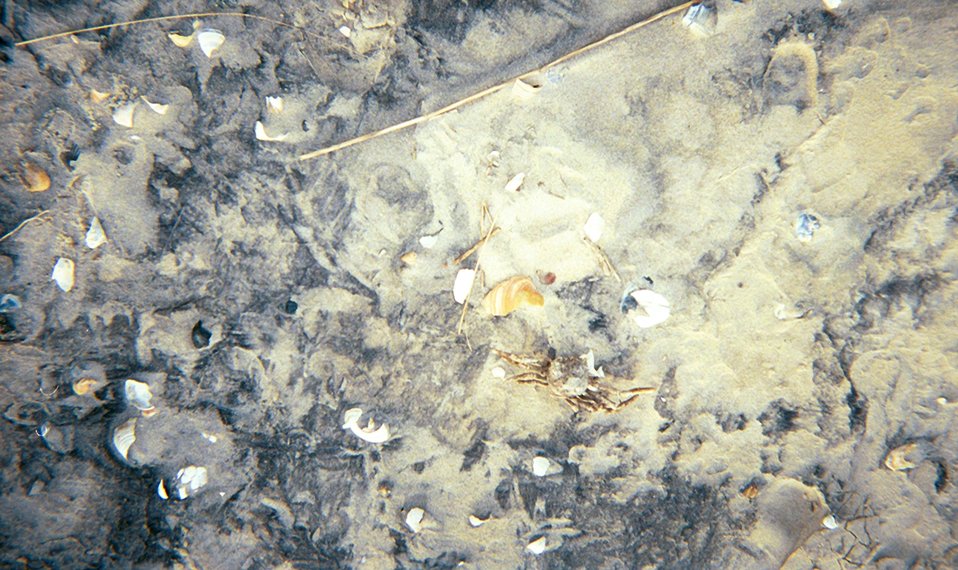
A crab carapace amongst broken seashells and other debris of the sea.